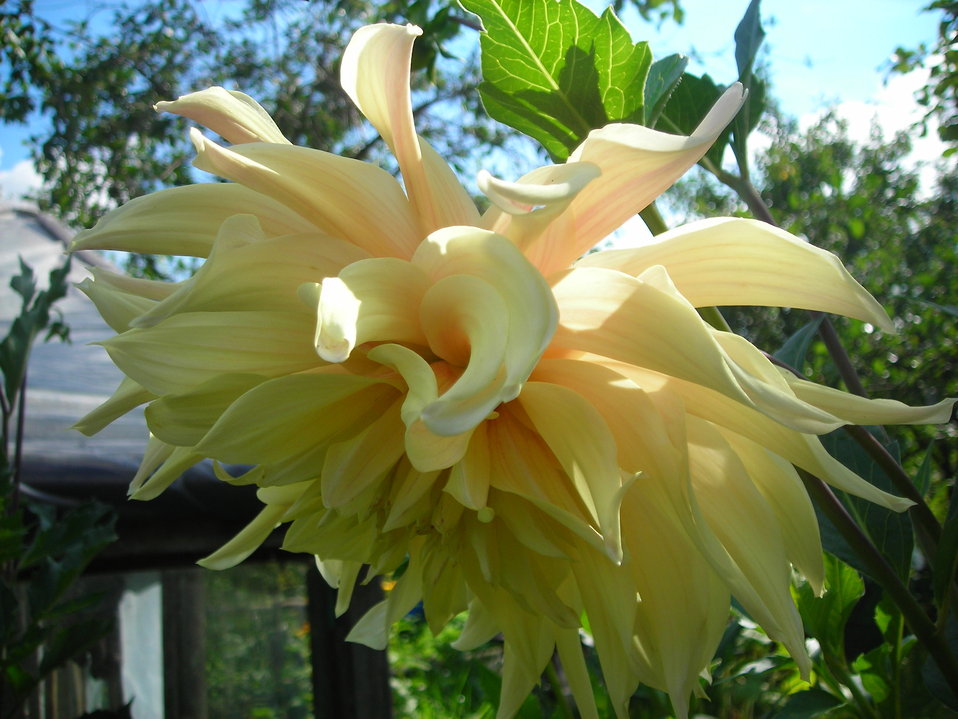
Русский: Желтая георгина Dahlia yellow